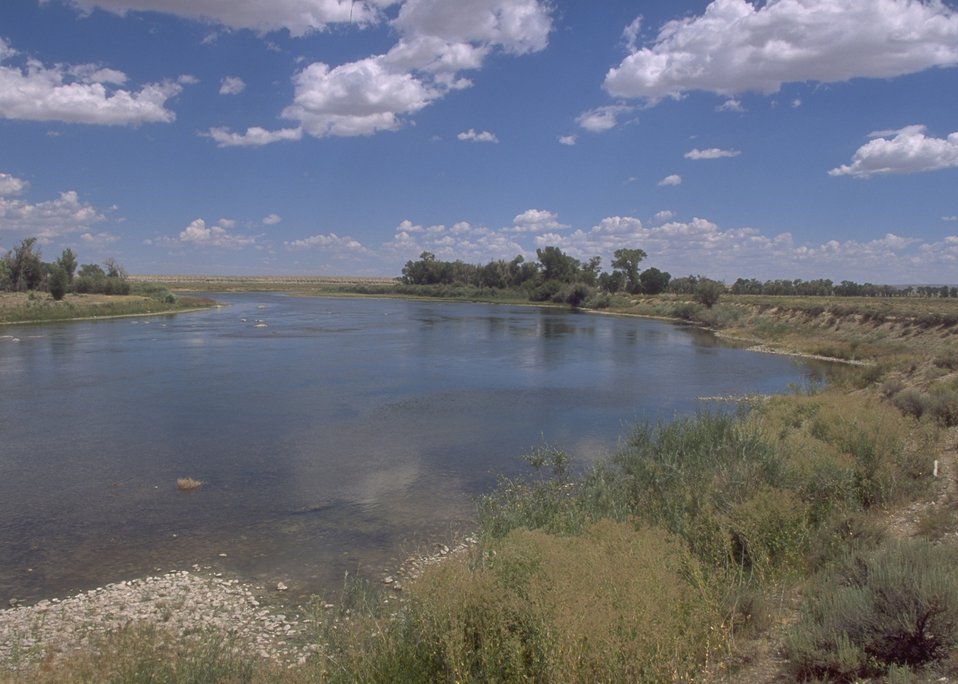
Lombard Ferry Crossing site along the Oregon & Mormon Trail on the Green River, Rock Springs Field Office.